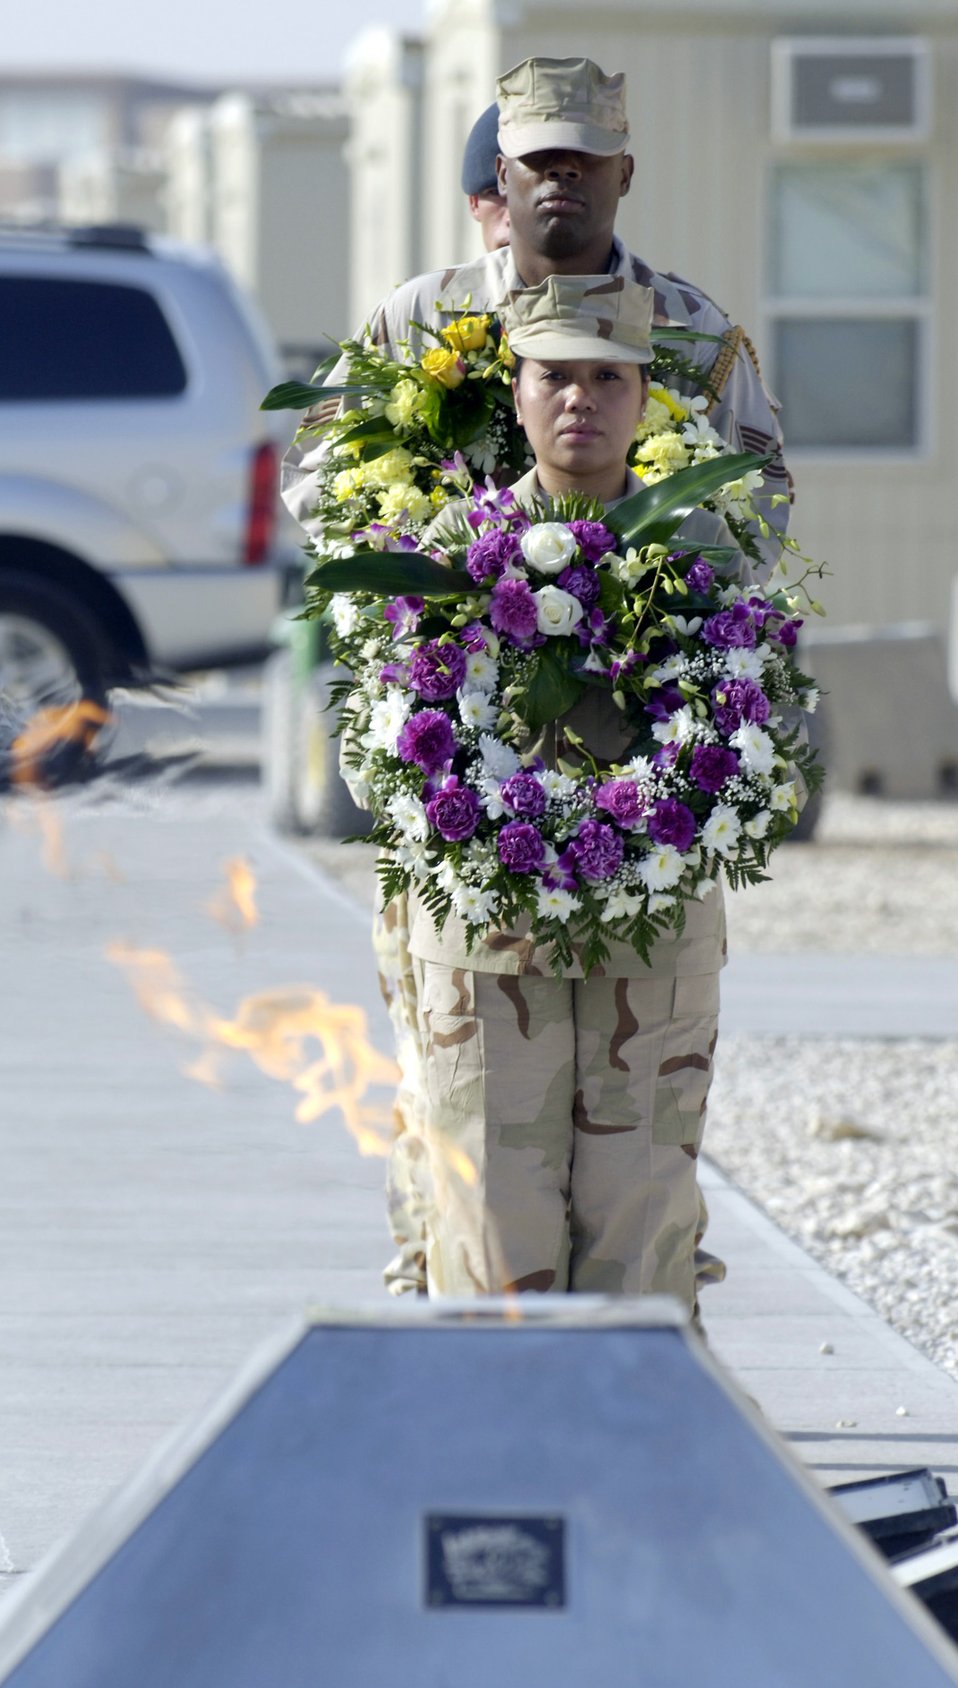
Southwest Asia memorial

Master Sgt. Juliet Alonso and a multinational wreath bearing team prepare to lay wreaths as coalition partners from several countries gathered May 28 at this deployed location in Southwest Asia to participate in a Memorial Day ceremony. Sergeant Alonso is a services specialist deployed from Dobbins Air Reserve Base, Ga., and hails from Centerville, Ga. Originally known as Decoration Day, Memorial Day ceremonies are a time to pay tribute to servicemembers who have paid the ultimate sacrifice in securing freedom.